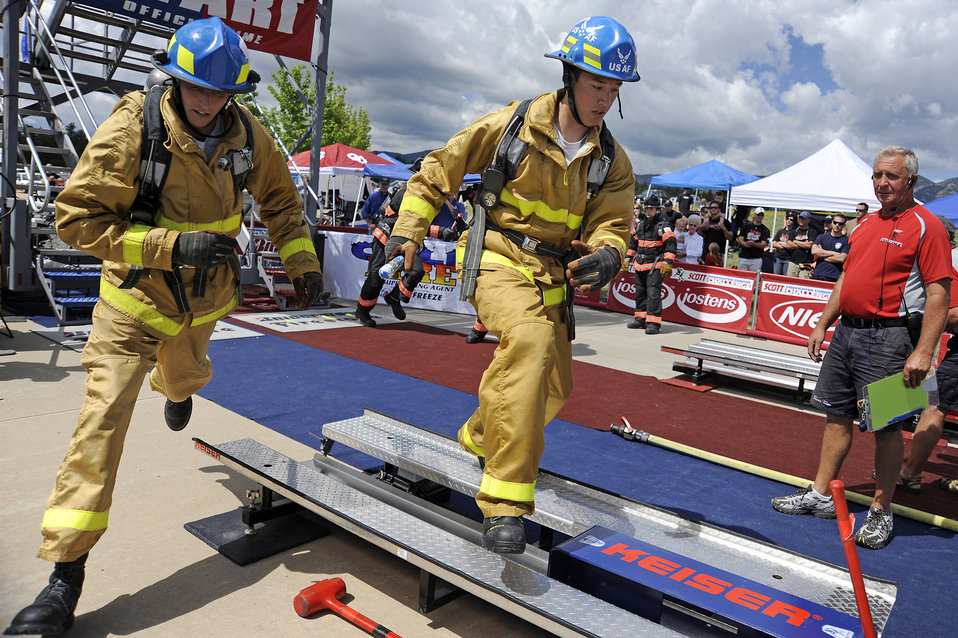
Firefighters Combat Challenge

Air Force Academy GI's relay team member Staff Sgt. Tanner Derosier, left, hands the baton to Airman 1st Class Steven Cimochowski who's ready to take on the Keiser Force Machine which simulates a forcible entry into a building. The two-day regional Firefighter Combat Challenge competition was held June 24/25 at the Air Force Academy's Falcon Stadium, showcasing the skills of nearly 200 military and civilian firefighters, which included 28 academy firefighters. The national and world championships will be held in October and November, of which all academy firefighters qualified to participate.